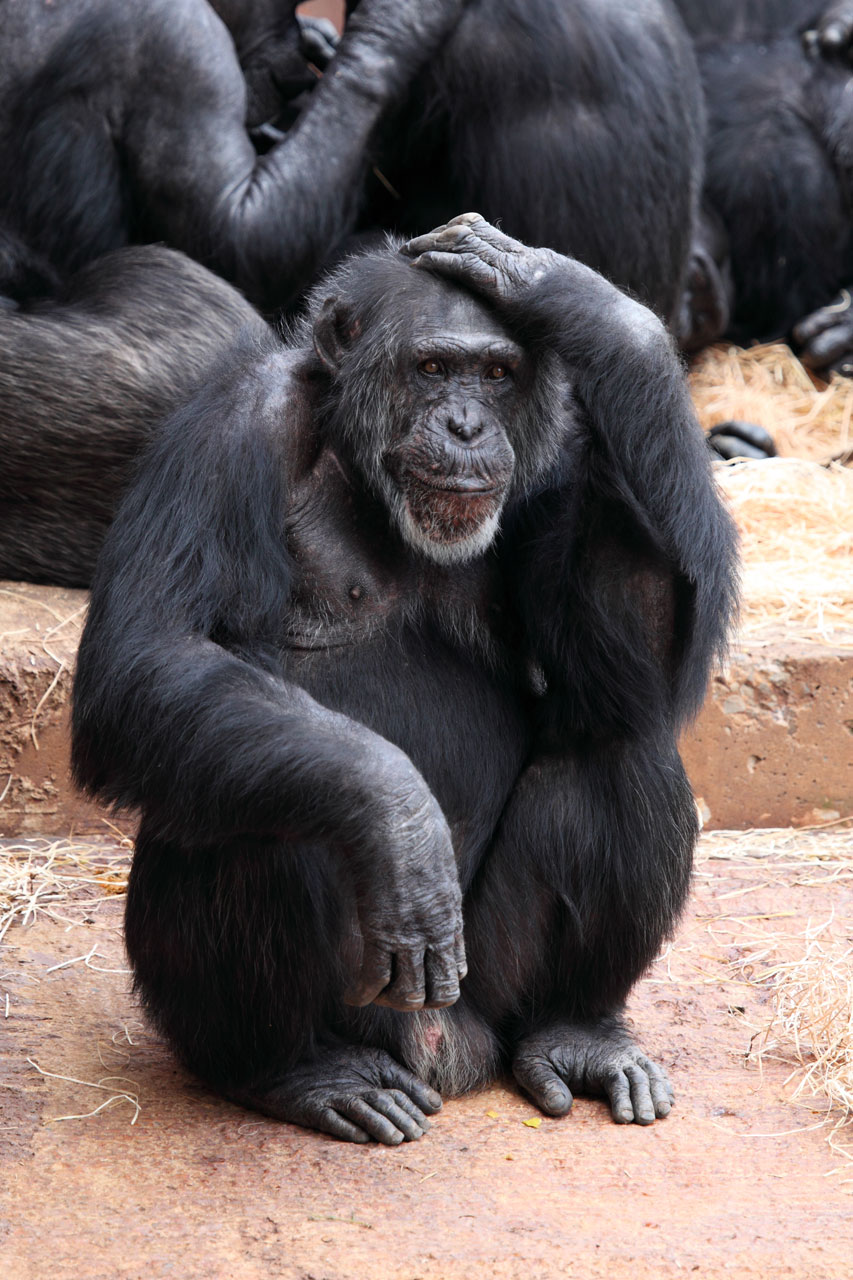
Thinking monkey

Monkey thinking hard - possibly where did i put that banana?.